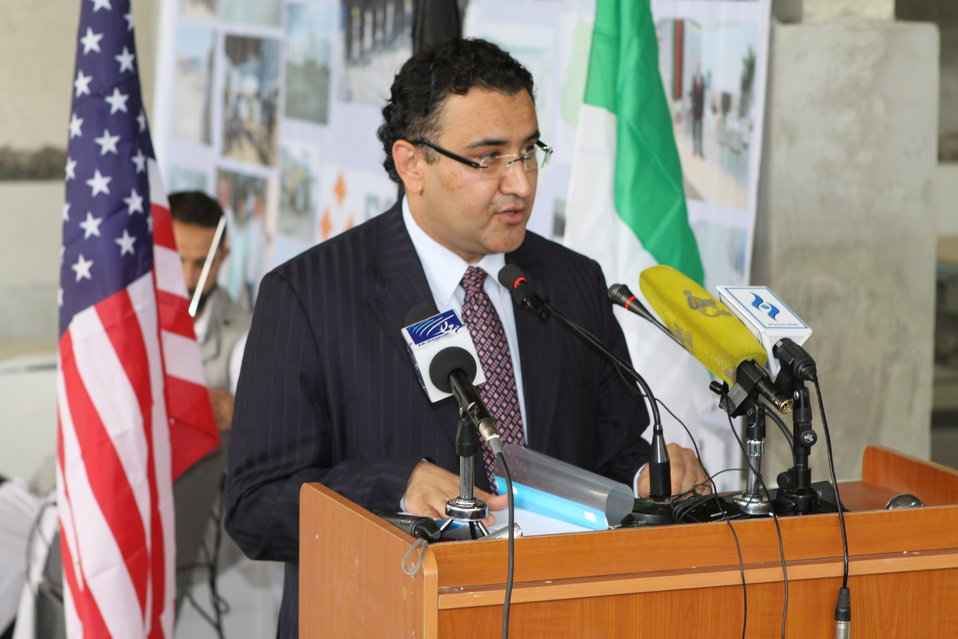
100525 Hirat Marble Conference 170